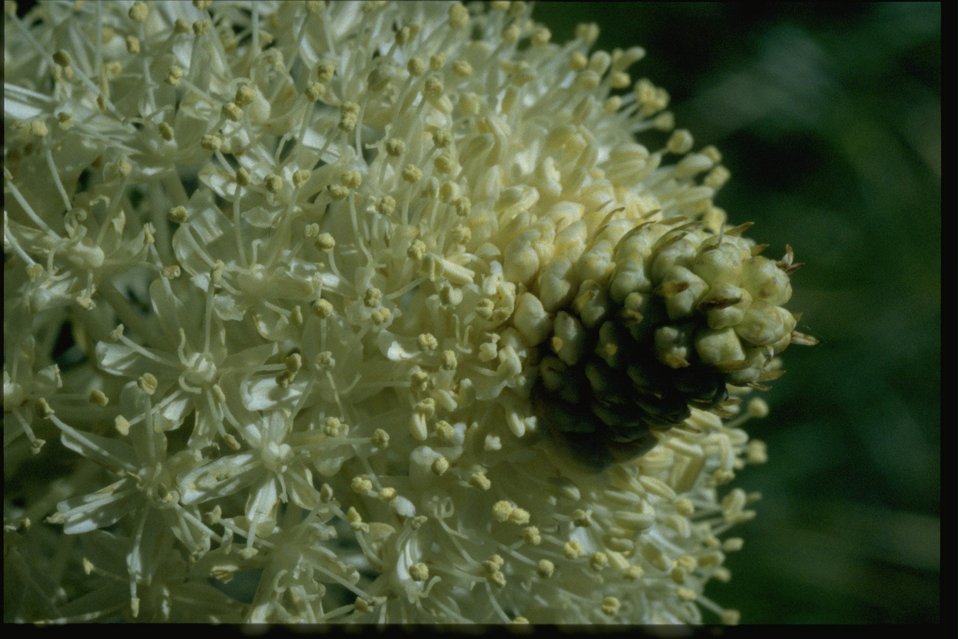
Closeup shot of Xenophyllum tenax.